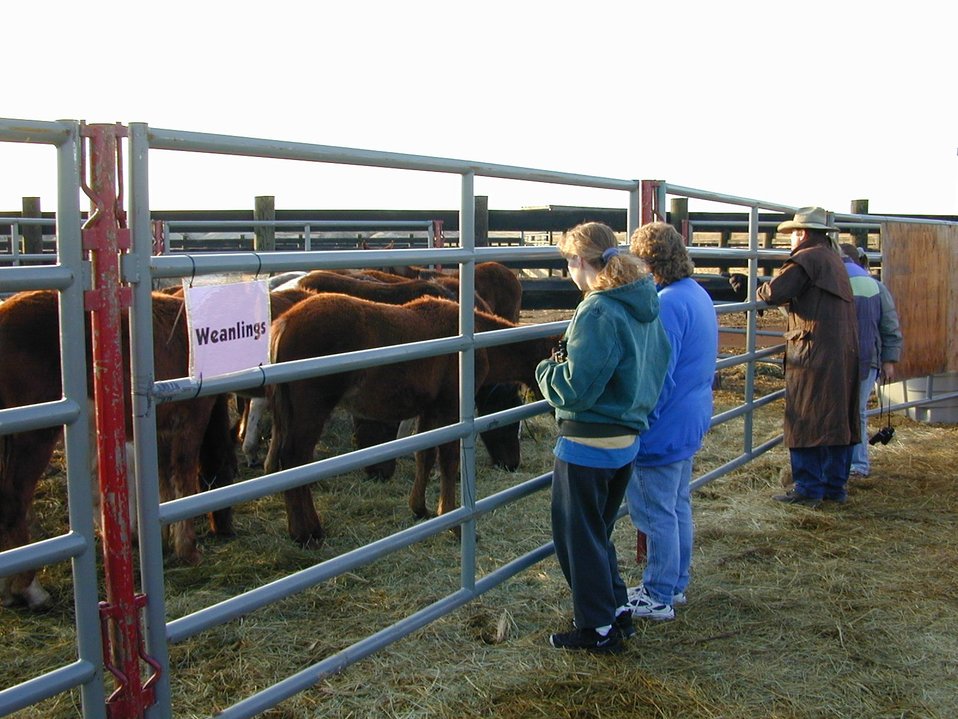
Wild Horse and Burro Adoption